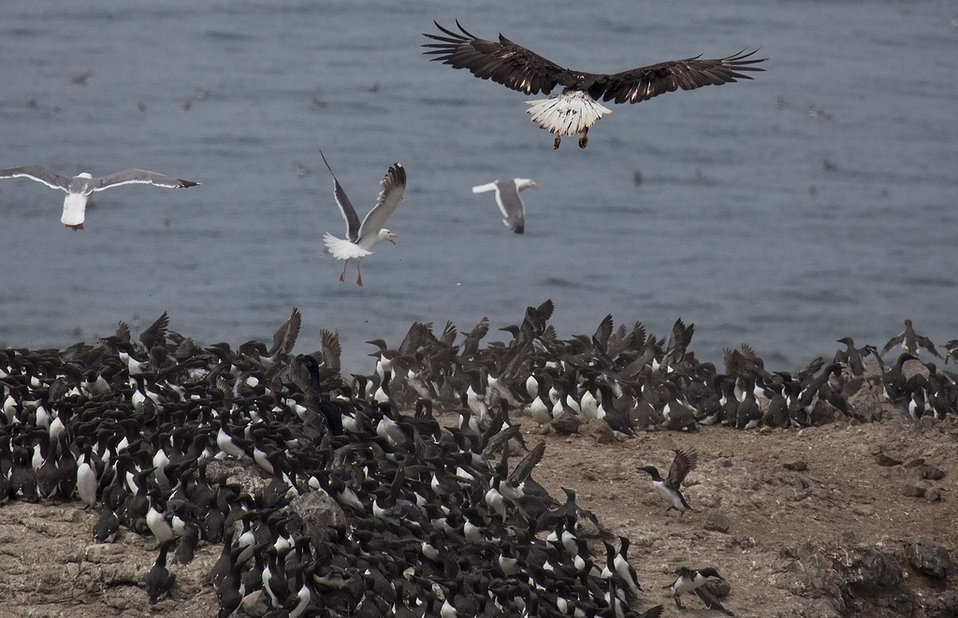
Look out!

A bald eagle prepares to pick off a common murre from Colony Rock in Oregon Islands National Wildlife Refuge, OR.